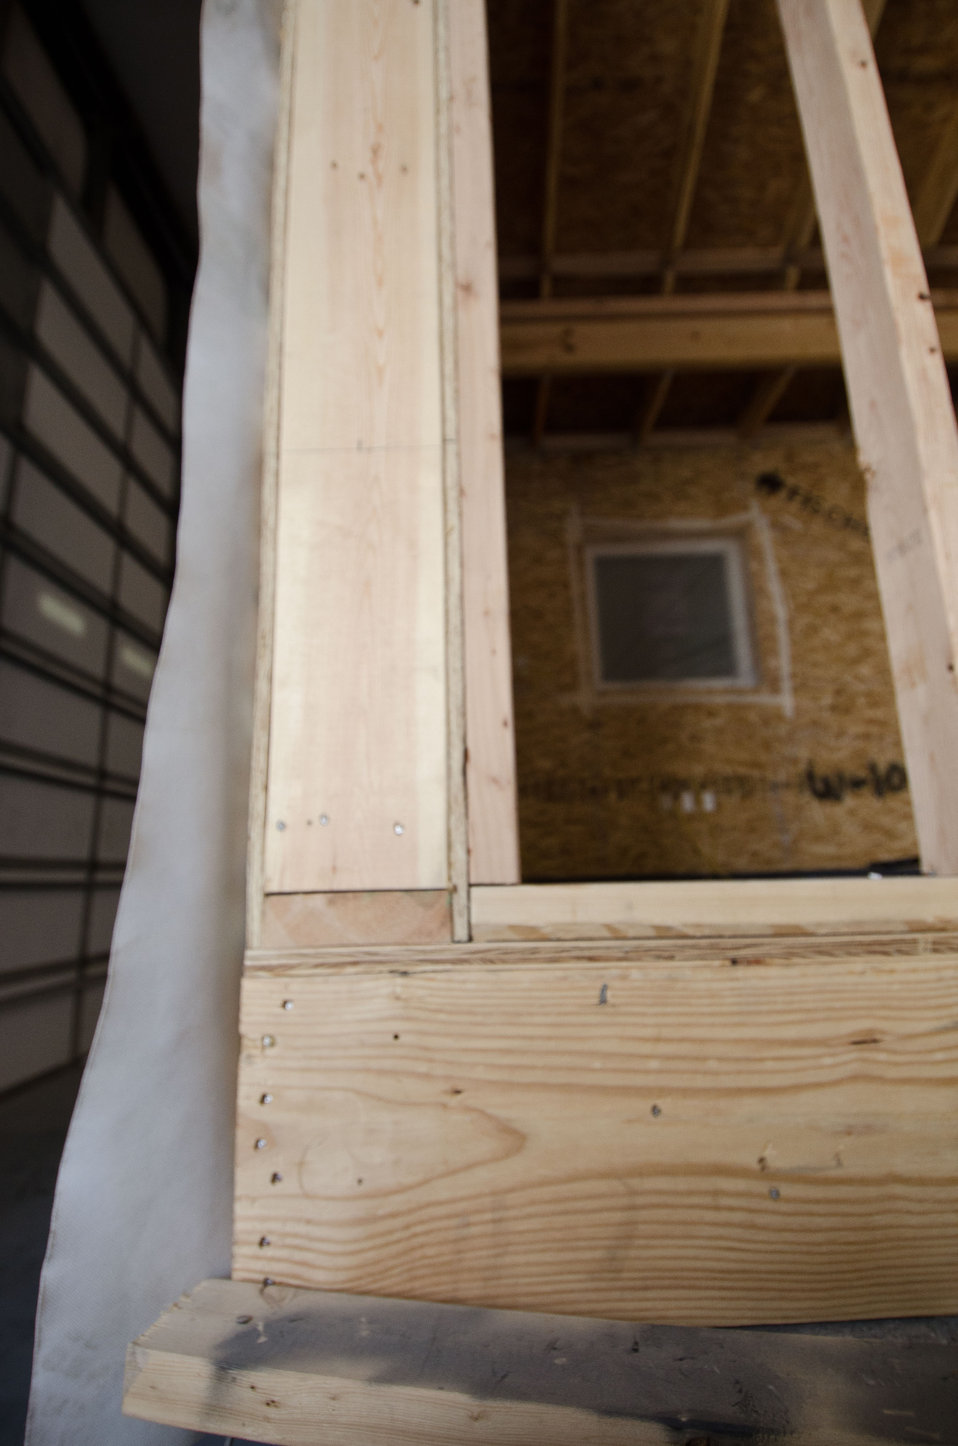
Extra thick foam filled floors and exterior walls add to the climate sealing and energy efficiency of a new type of manufactured home from Stardust Industries on Wednesday, July 13, 2011 in Monticello, KY. They are helping retool and redirect Kentucky’s houseboat manufacturing industry – which has been decimated because of the struggling economy – by using its facilities and manpower to create low-cost housing that is energy efficient. Rural Development obligated $499,000 in Rural Business Enterprise Grant funds to support this unique endeavor. Up until a few years ago, there were several successful houseboat manufacturers in the four-county area surrounding the city of Somerset. Most have now ceased operation or drastically reduced output, which has led to dramatic, long-term job loss. These new energy efficient homes will be constructed in redesigned, refitted houseboat factories using local workers that have been retrained.